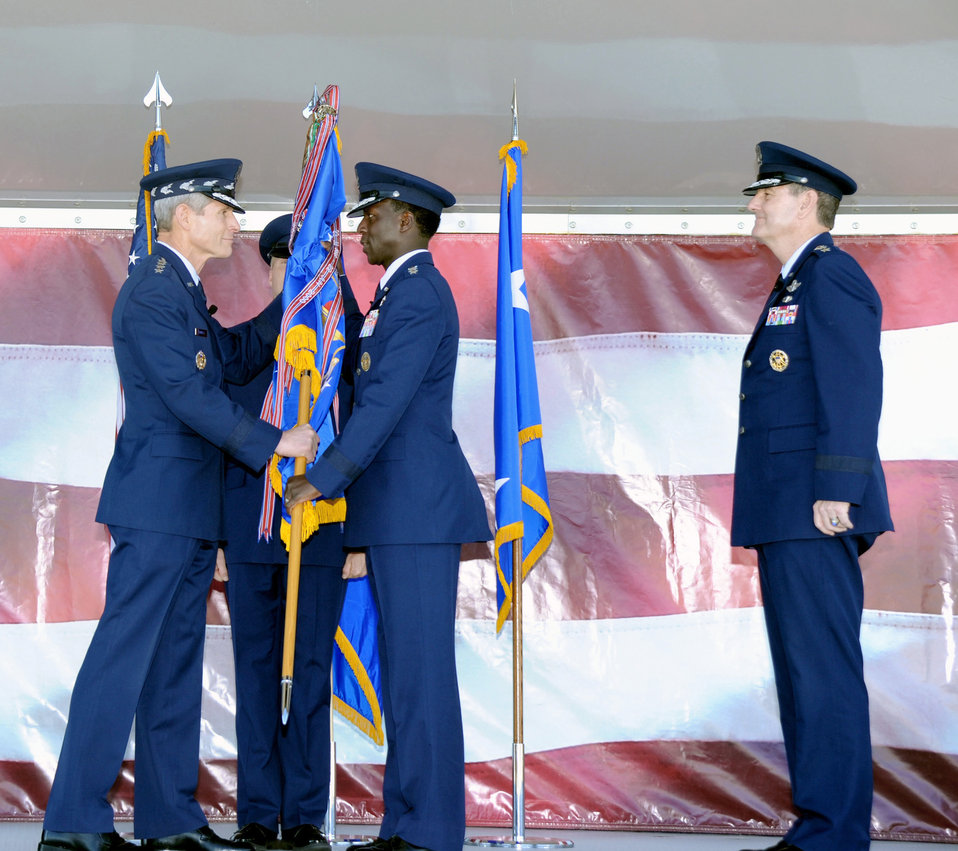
New AETC commander

Air Force Chief of Staff Gen. Norton Schwartz (left) presents Gen. Edward A. Rice Jr. (center) with the Air Education and Training Command colors during a change of command ceremony Nov. 17, 2010, at Randolph Air Force Base, Texas. General Rice succeeded Gen. Stephen R. Lorenz (right) as AETC commander.